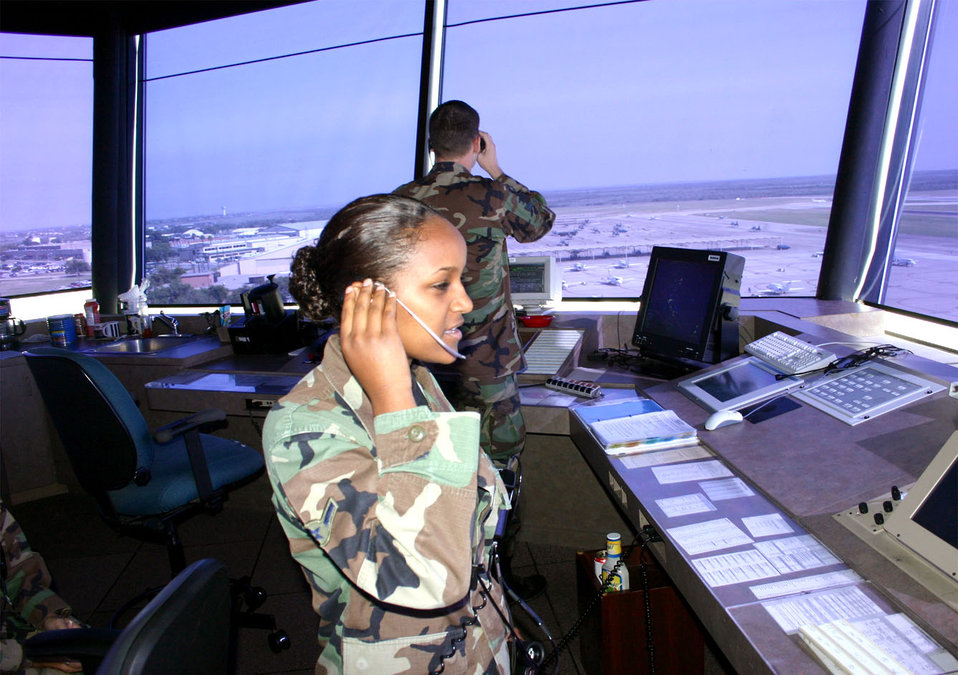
Airman takes journey to live 'American dream'

LAUGHLIN AIR FORCE BASE, Texas -- Airman Kelemwork Tariku-Shotts communicates with an aircrew on the flightline here. Airman Tariku-Shotts was adopted and brought to United States from Ethiopia in 1991 when she was 5 years old. She is an air traffic controller with the 47th Operations Support Squadron.